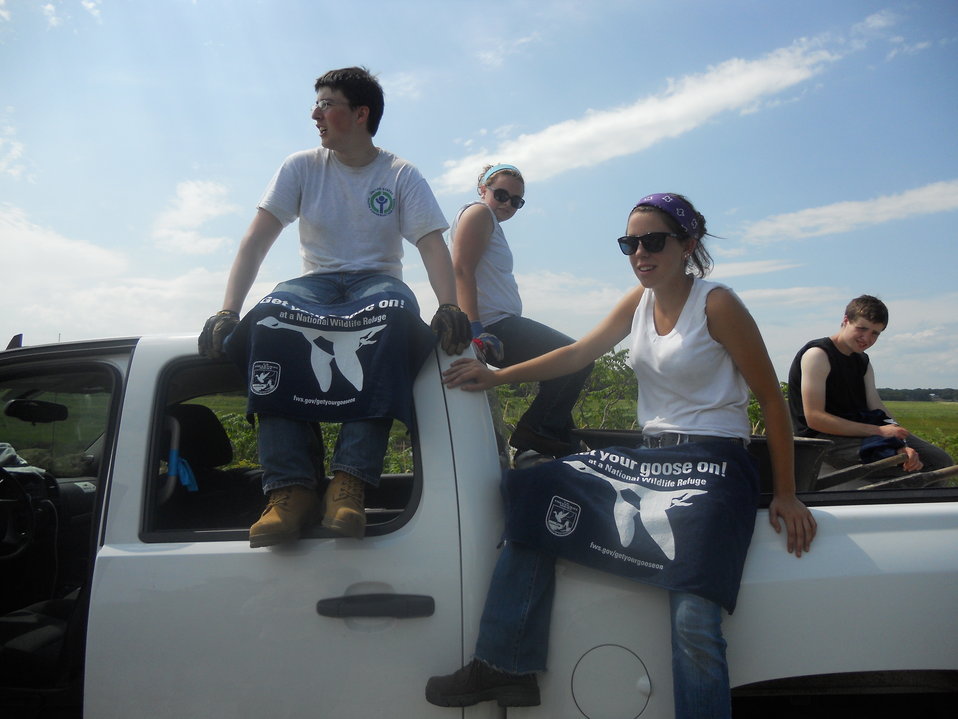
Get Your Goose On!

Taking a break.